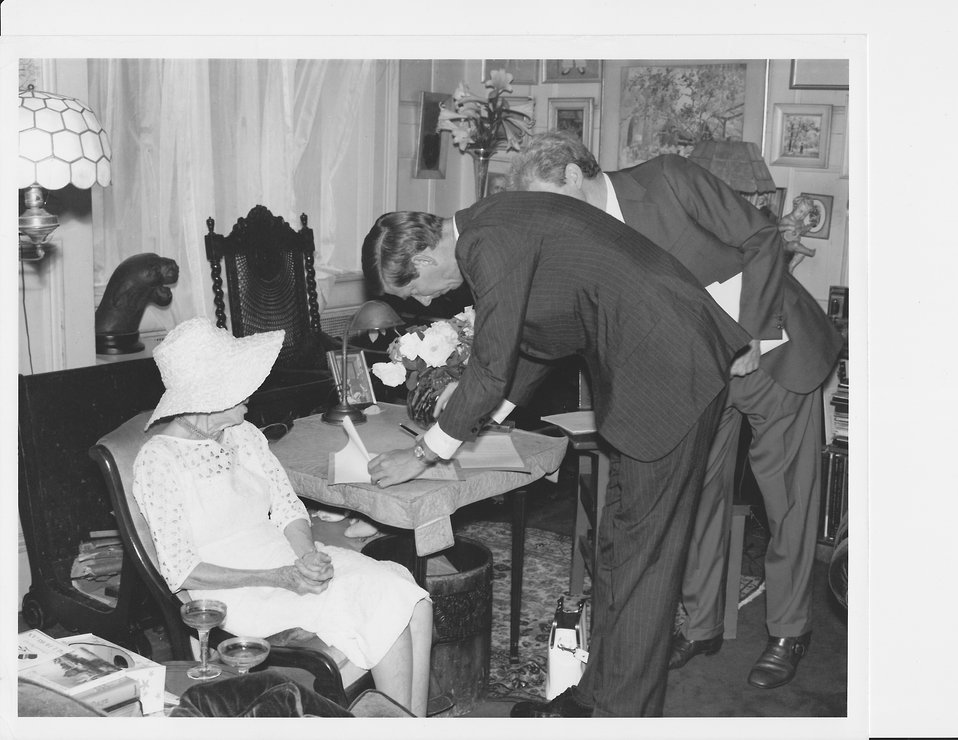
Donation of Salt Meadow 2

Asst Secretary of the Interior Nathanial Reed accepts the donation of Salt Meadow (now part of McKinney National Wildife Refuge) from Esther Lape, 1972